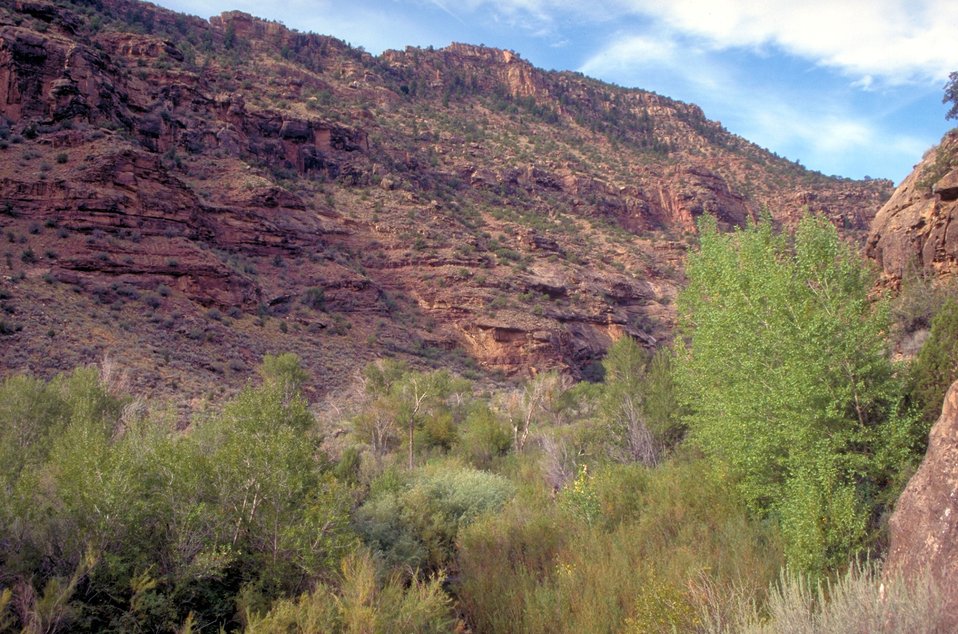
Desolation/Gray Canyons near Price, Utah.